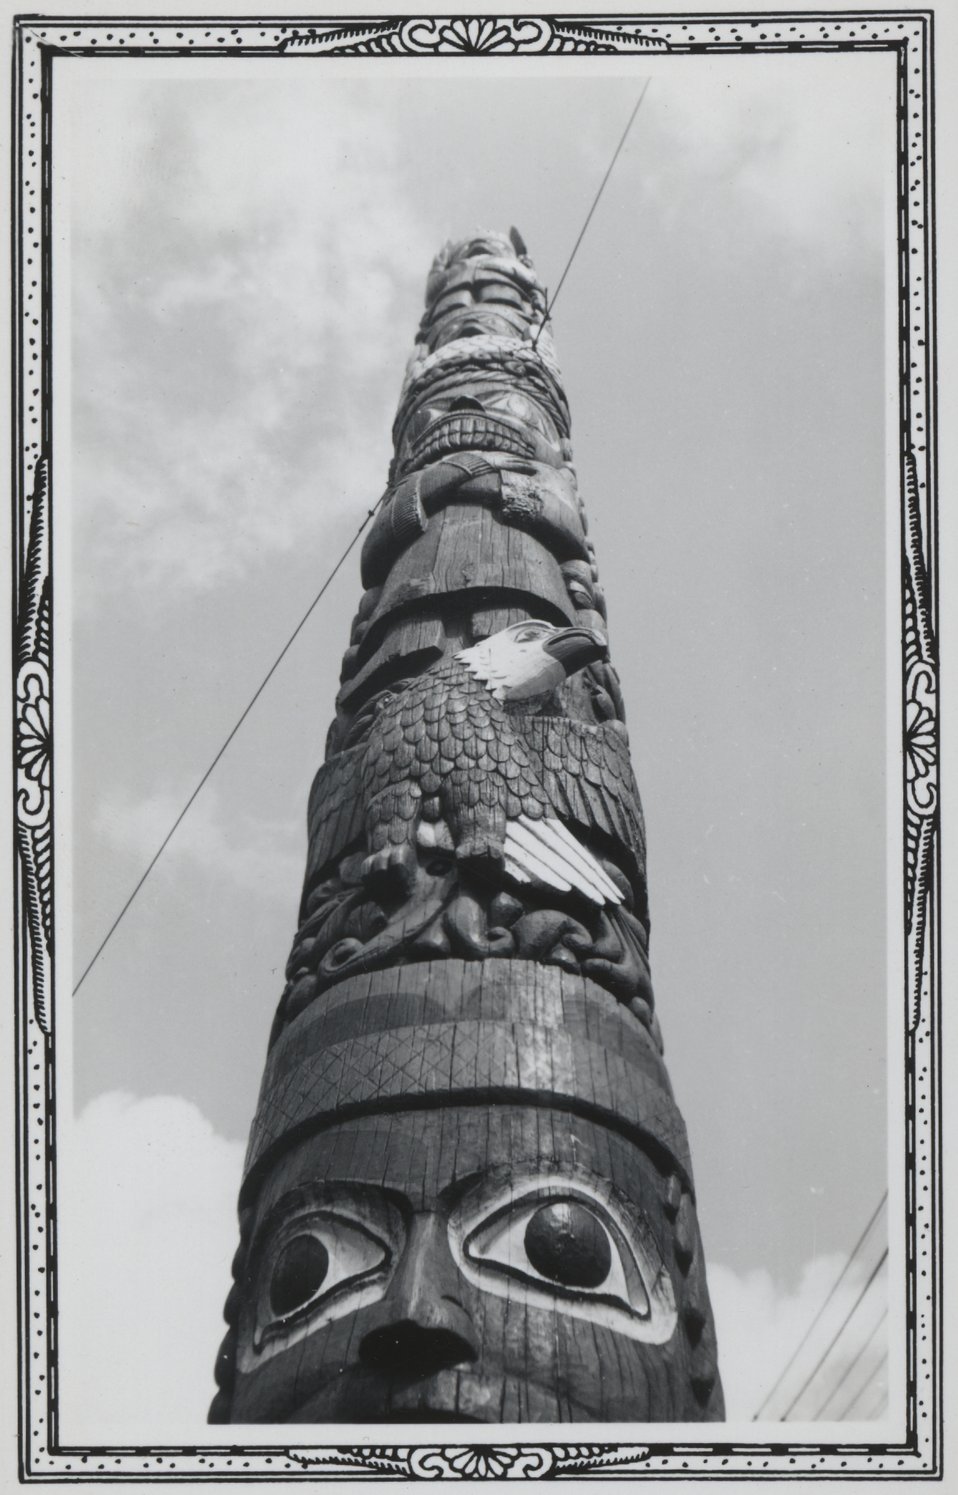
A beautiful totem pole at Ketchikan.